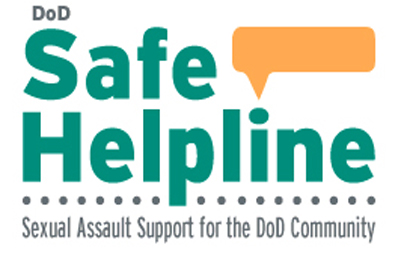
DOD launches sexual assault response helpline